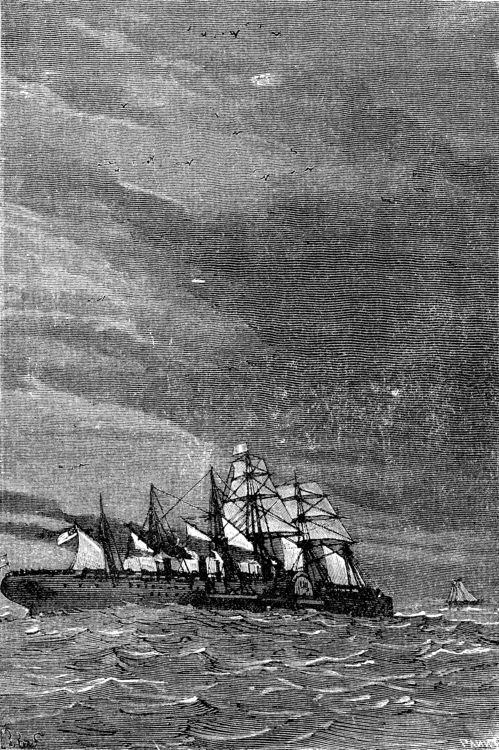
An illustration from Jules Verne's novel 'A Floating City' (1869) drawn by Jules Férat. Polski: Ilustracja powieści Juliusza Verne'a 'Pływające miasto' (1869) autorstwa Julesa Férata. Français : Jules Verne: 'Une Ville flottante' (1869), dessins par Jules Férat. Orginal text: Français : On signala par tribord une petite goëlette.